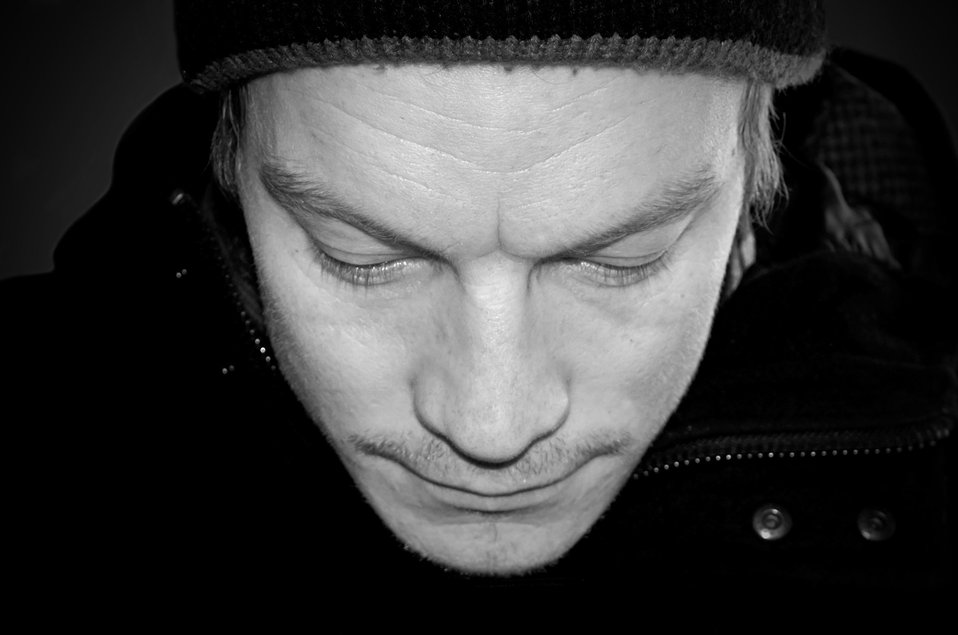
Sad man - portrait.